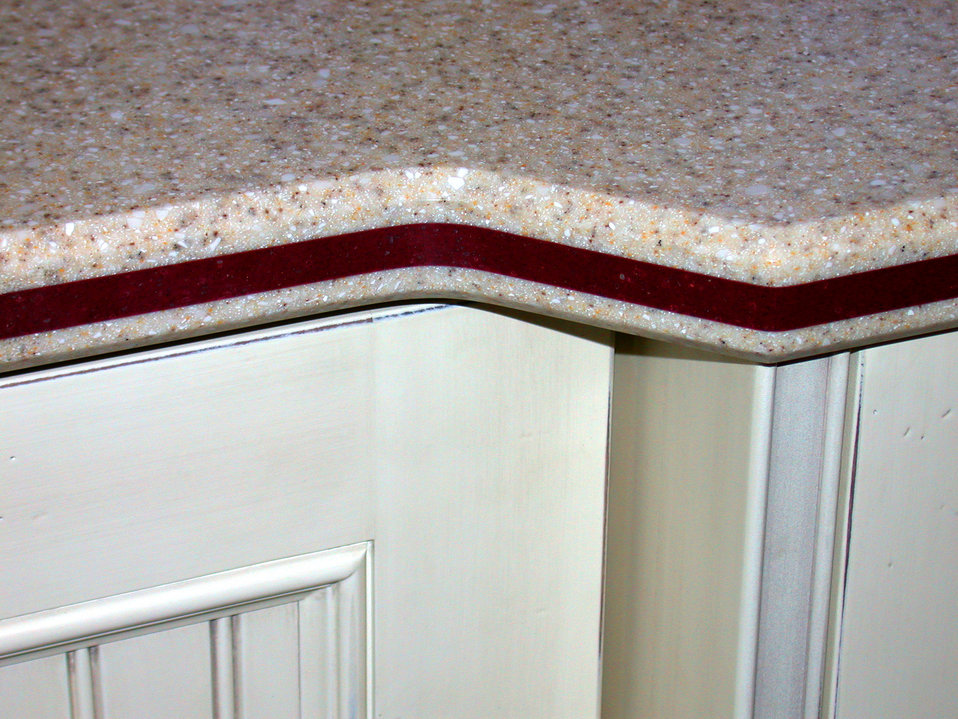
The counter top photographed in this 2002 image revealed the details of its contrasting colorized edge, marked by a maroon colored strip. Such a detail assists those with vision impairments with decerning the demarcated counter top regions from one another. These queues can be quite aesthetically appealing, while at the same time, are very helpful not only to those with impairments, but to those who may need a mere indication now and then, as to what goes where in a complex kitchen environment.